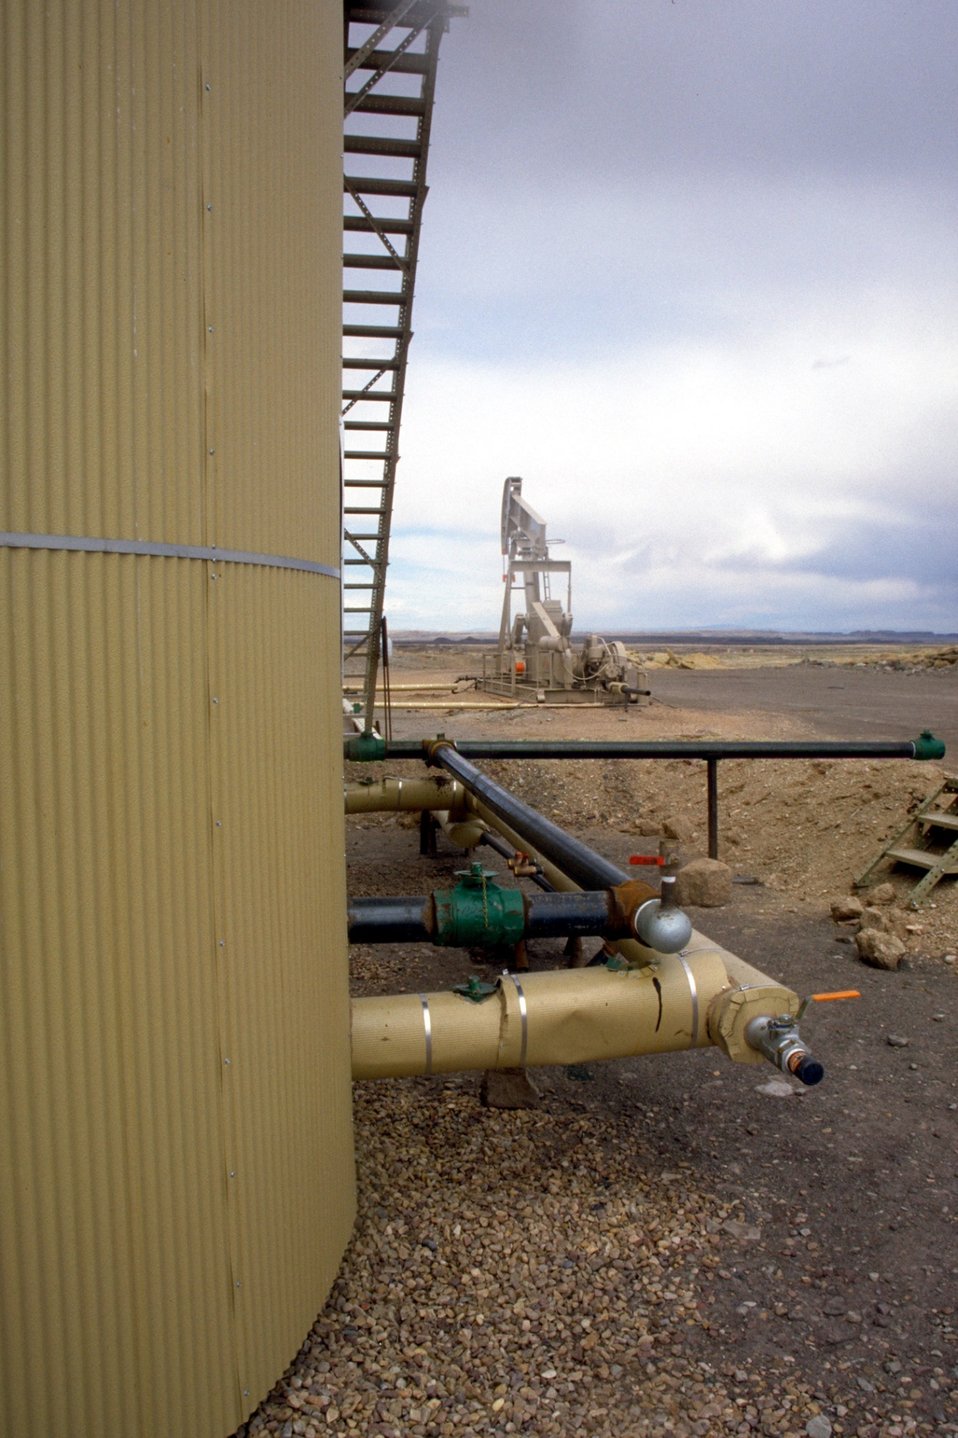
Pump unit producing coal bed methane near Price, Utah.